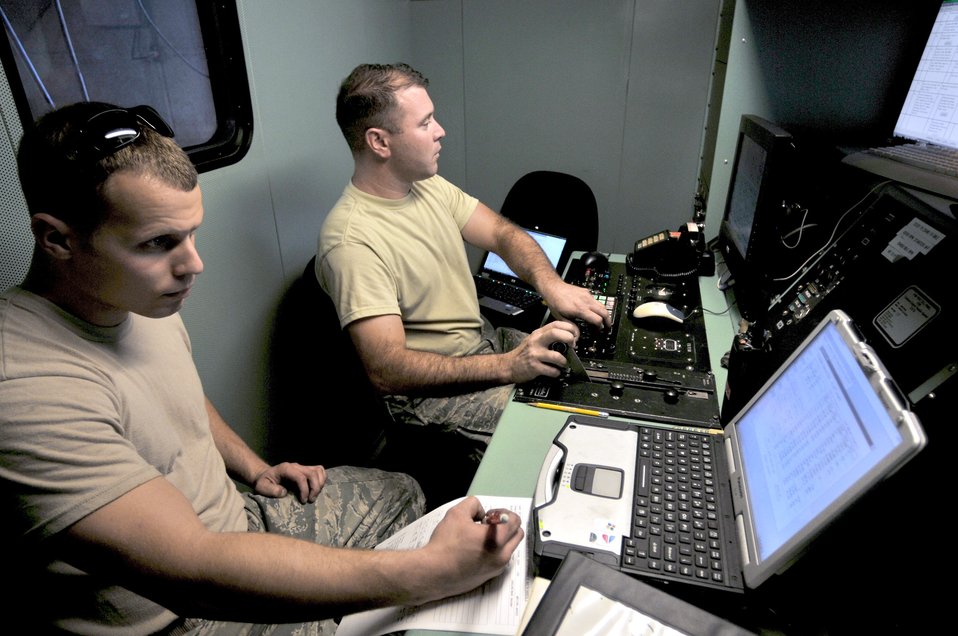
F-15 Eagle engine test run

Tech. Sgt. Kenneth Creager (left) and Master Sgt. Joseph Whitley perform an engine test run and record diagnostics on an F-15 Eagle engine following a repair November 10, 2010, at the Florida Air National Guard base in Jacksonville International Airport, Fla. Both Sergeants are assigned to the 125th Fighter Wing propulsion shop.